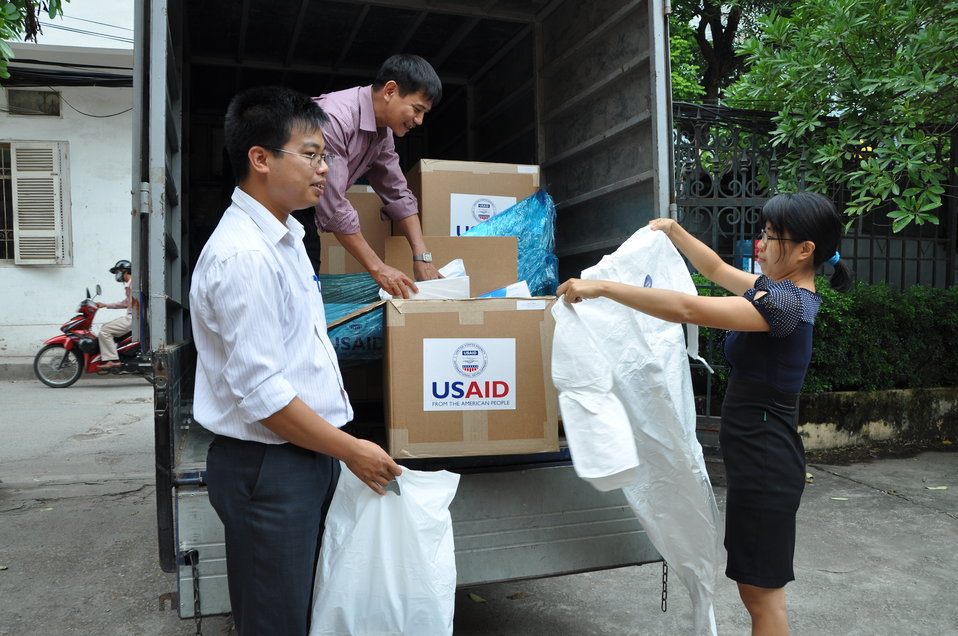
Vietnamese officials inspect new personal protective equipment in Hanoi in September 2011.

Nguyen Dug Hanh of Vietnam's Department of Animal Health (on truck), transport supervisor Doan Phu Huyen (left) and Nguyen Thi Thanh Diep inspect a shipment of 1,700 personal protection kits -- suits, masks, gloves, goggles and related items -- in September 2011 before they are shipped to Can Tho, Ha Nam, Hung Yen, Kieng Giang, and Quang Tri provinces to help veterinary officials and animal health workers battle disease outbreaks in the country. Since 2007, USAID has provided over 15,000 protective equipment kits for animal health workers in Vietnam.